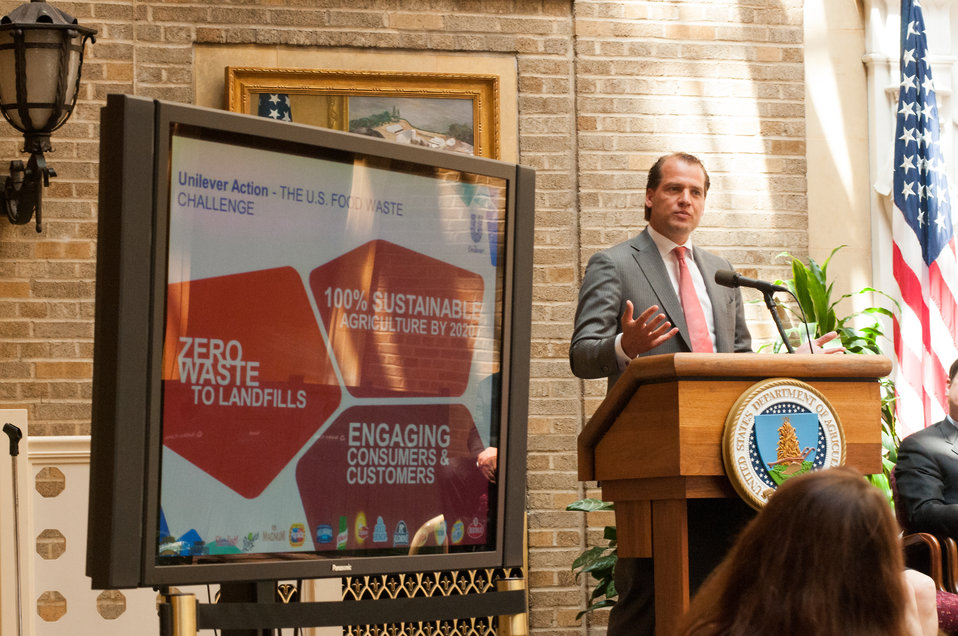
President of Unilever North America Kees Kruythoff discusses the importance of public and private cooperation in the effort to end hunger in the U.S. during the U.S. Food Waste Challenge sponsored by the U.S. Department of Agriculture (USDA) and Environmental Protection Agency at USDA in Washington, D.C. on Tuesday, Jun. 4, 2013. The U.S. Food Waste Challenge is a nationwide effort to reduce, recover and recycle U.S. food waste.